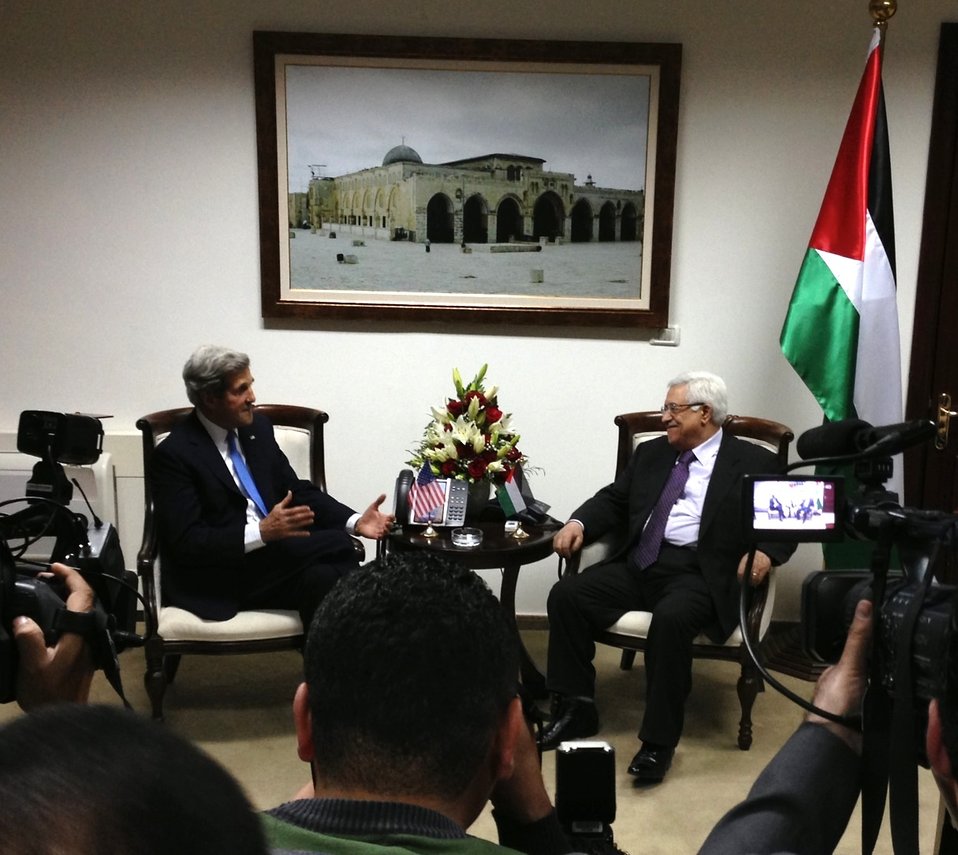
Secretary Kerry Meets With President Abbas in Ramallah

U.S. Secretary of State John Kerry meets with President of the Palestinian Authority Mahmoud Abbas in Ramallah, April 7, 2013.